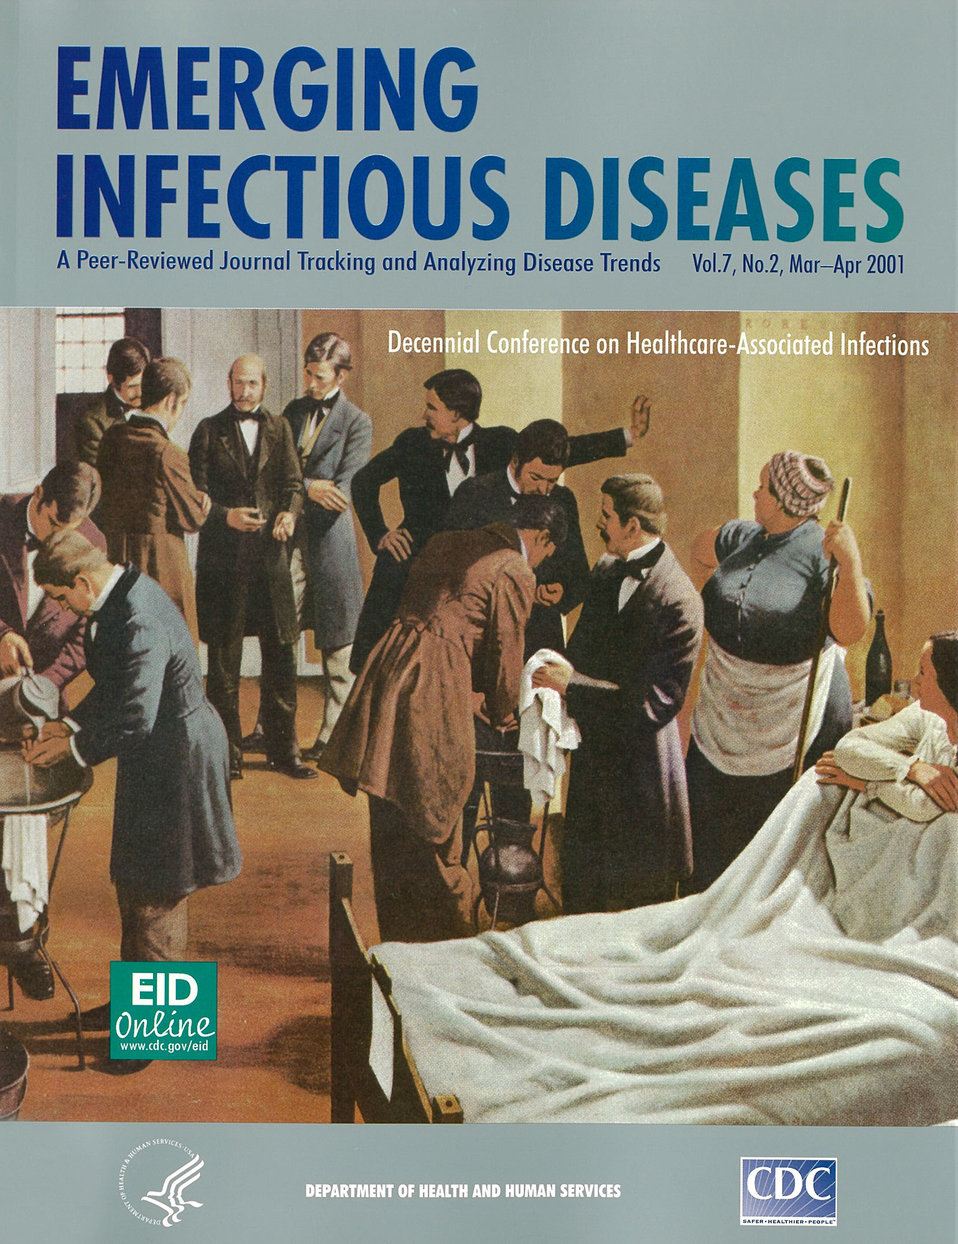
Emerging Infectious Diseases (EID) cover artwork for Volume 7, Number 2, March-April 2001 issue.